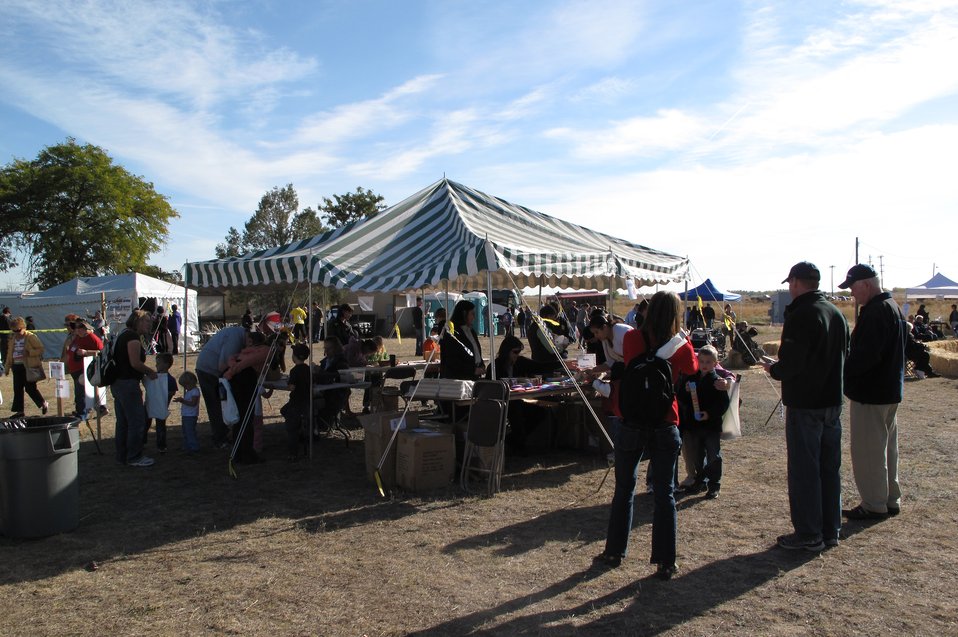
Refuge Round-up 2010

Booths at the Refuge Round-Up at the Rocky Mountain Arsenal.